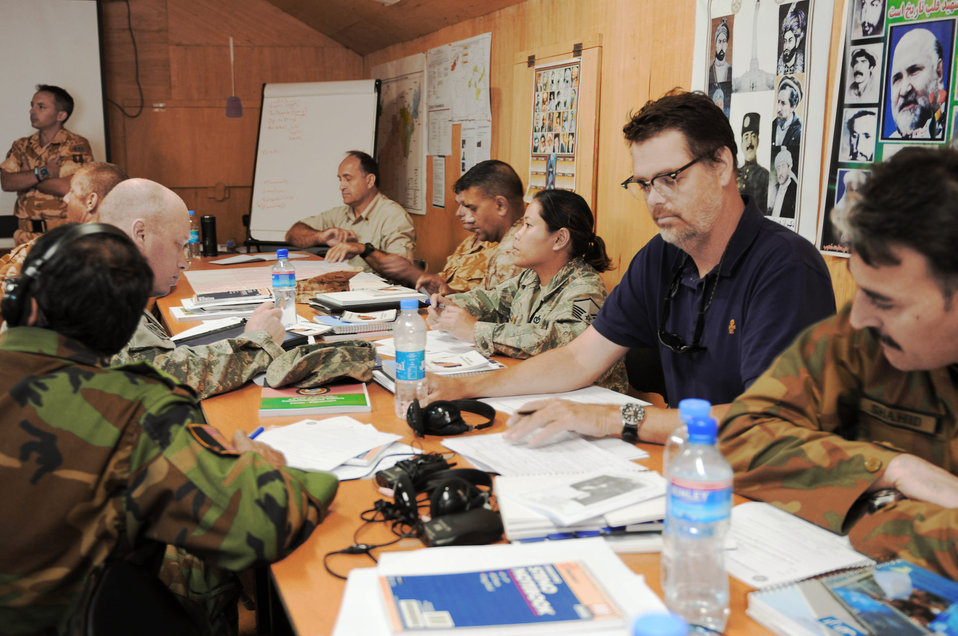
'AfPak Hands' members begin immersion training

Master Sgt. Irene Mason (center) receives counterinsurgency training April 28, 2010, at the Counterinsurgency Training Academy on Camp Julien, Afghanistan. Sergeant Mason is an engineer and a member of the 1st AfPak Hands Cohort.